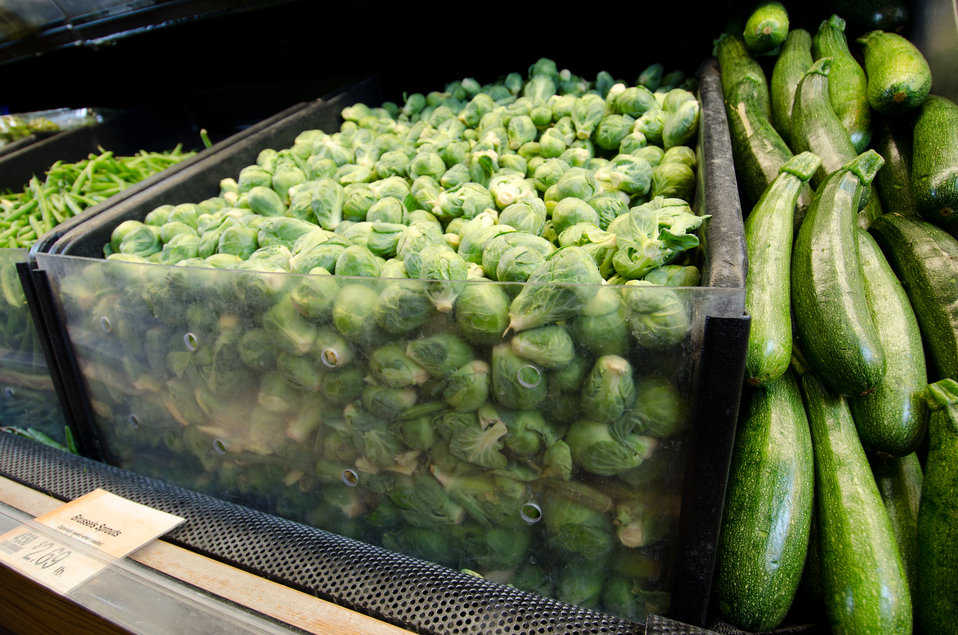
Brussel sprouts and other produce at a grocery store in Fairfax, Virginia, on March 3, 2011.